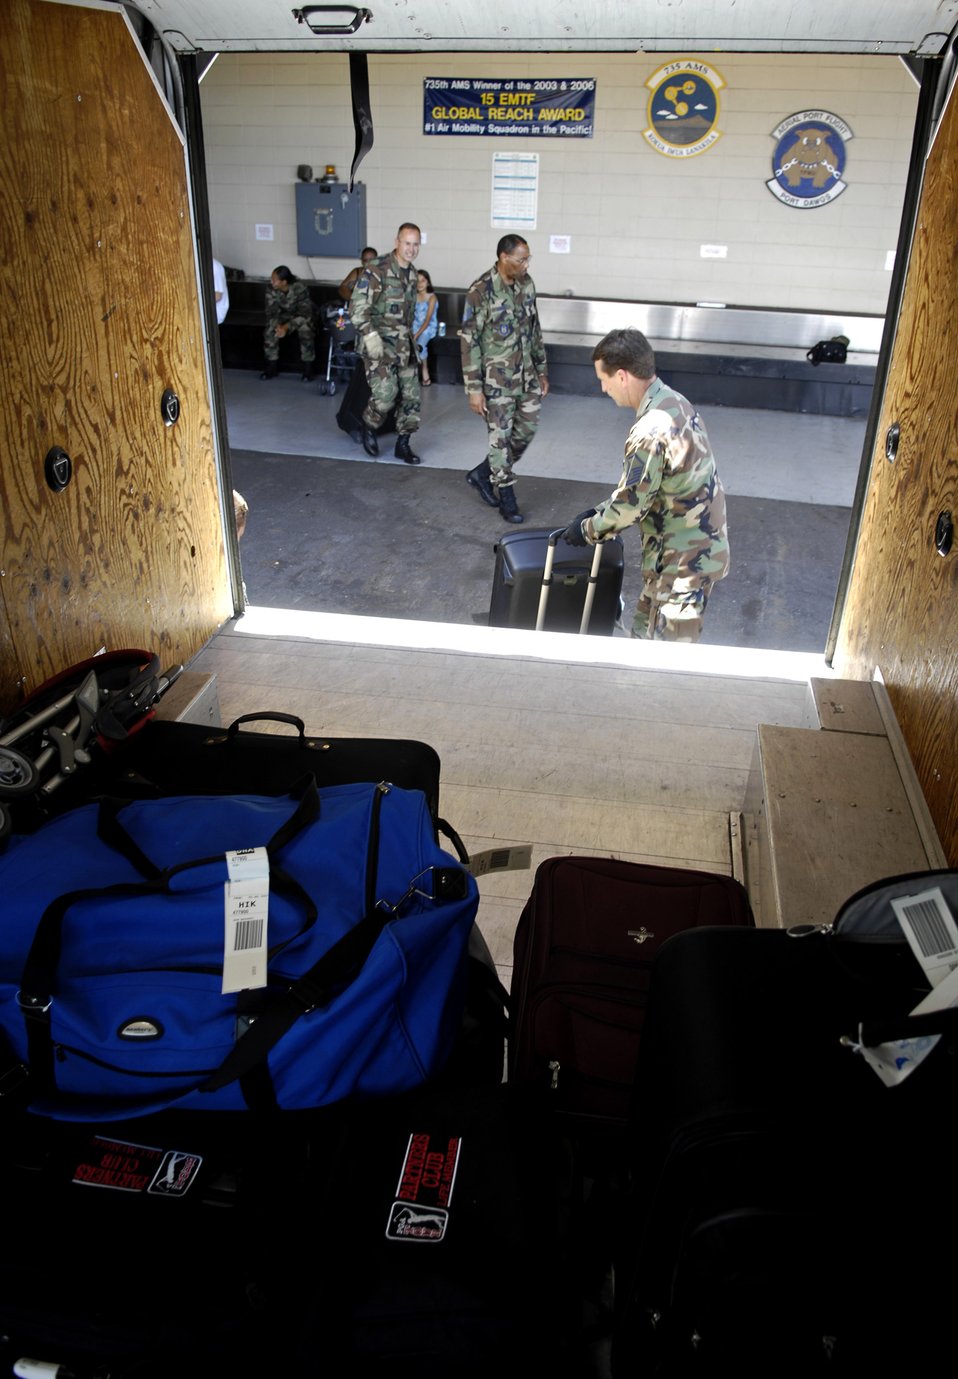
Wright-Patterson Airmen take over Hickam air operations

An air transportation specialist loads suitcases on a van July 2 at the passenger terminal center at Hickam Air Force Base, Hawaii. Reservists from the 87th Aerial Port Squadron from Wright-Patterson AFB, Ohio, are conducting their two-week duty with the 735th Air Mobility Squadron.